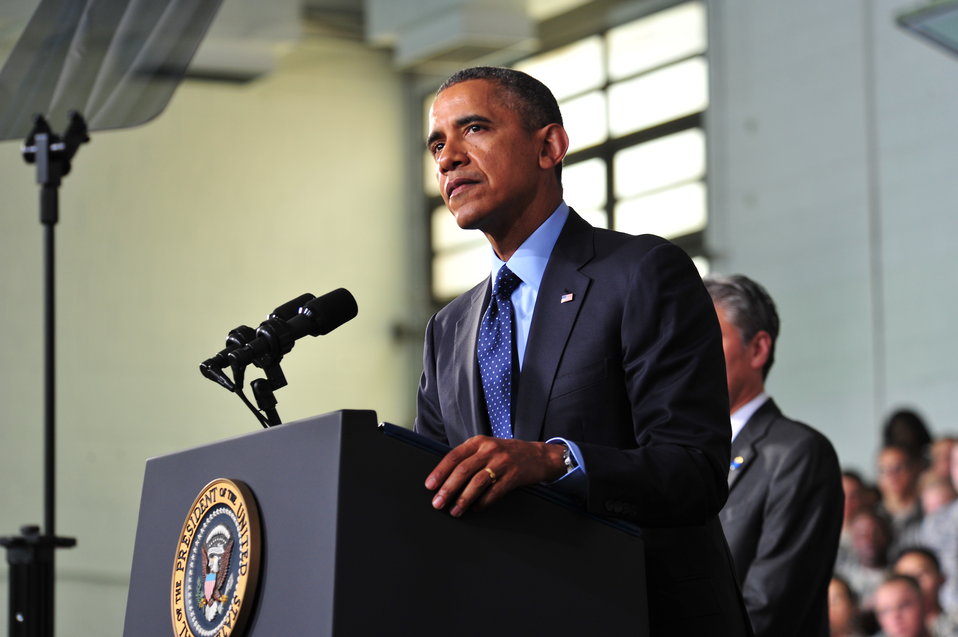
President Obama Delivers Remarks at a Combined Forces Command Briefing

President Barack Obama delivers remarks at a Combined Forces Command Briefing at Yongsan Garrison in Seoul, Republic of Korea on April 26, 2014.